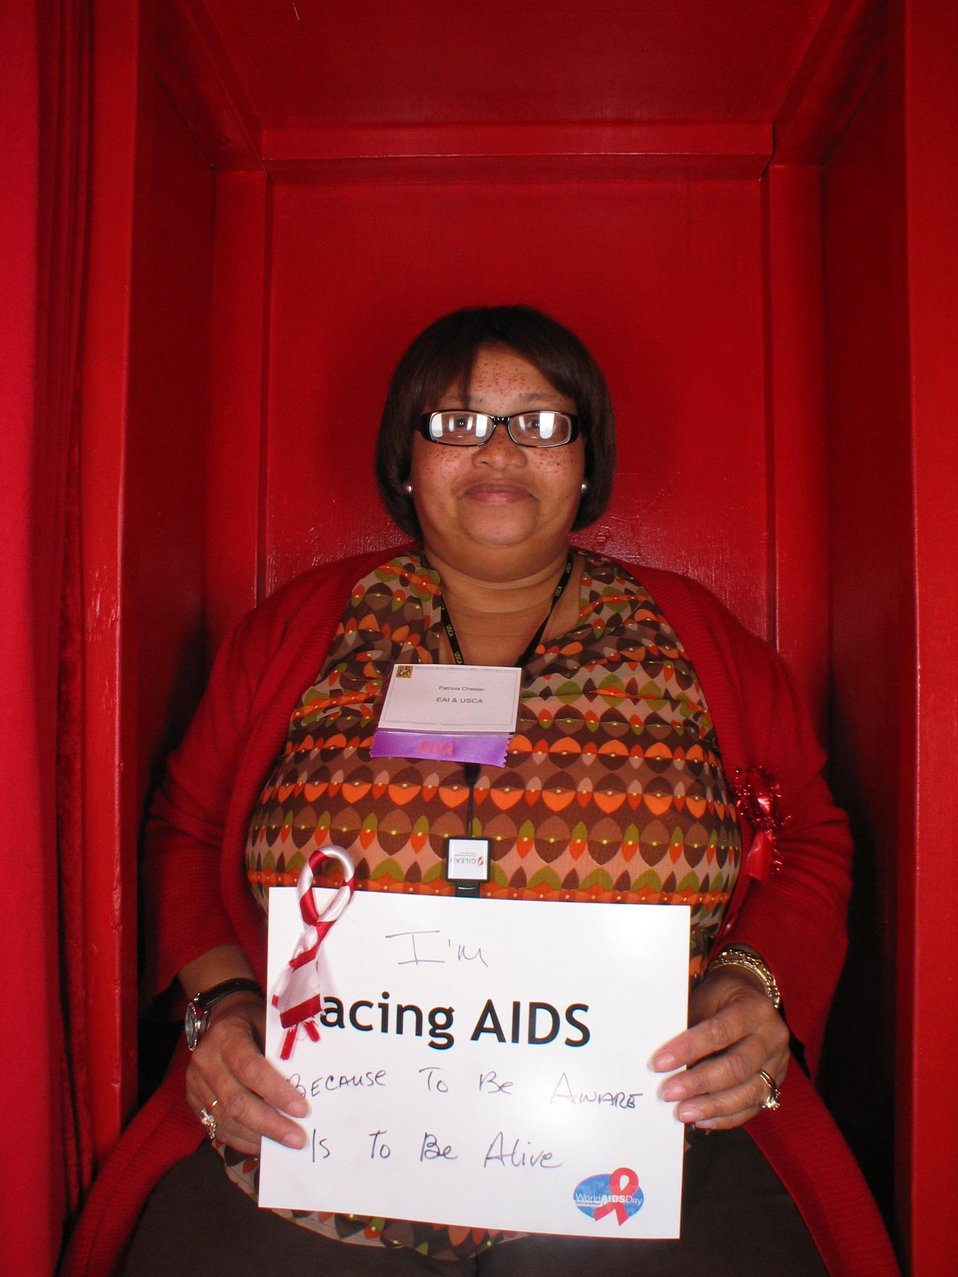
I'm Facing AIDS because to be aware is to be alive.